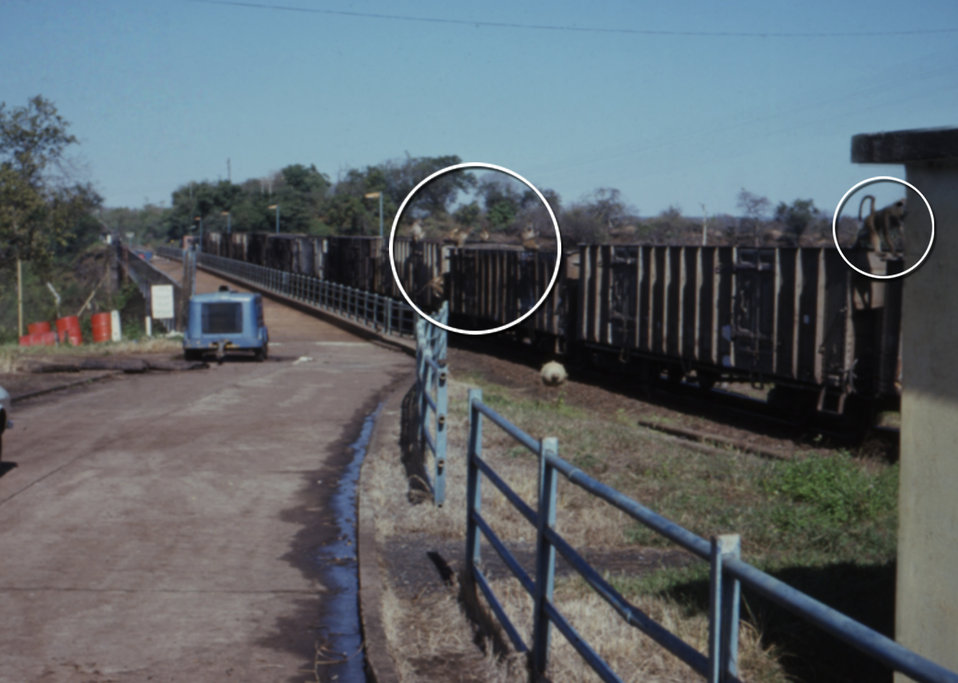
Baboons, Papio papio, and green monkeys, Cercopithecus aethiops, are shown here during a Marburg investigation in Victoria Falls, which borders Zimbabwe and Zambia.